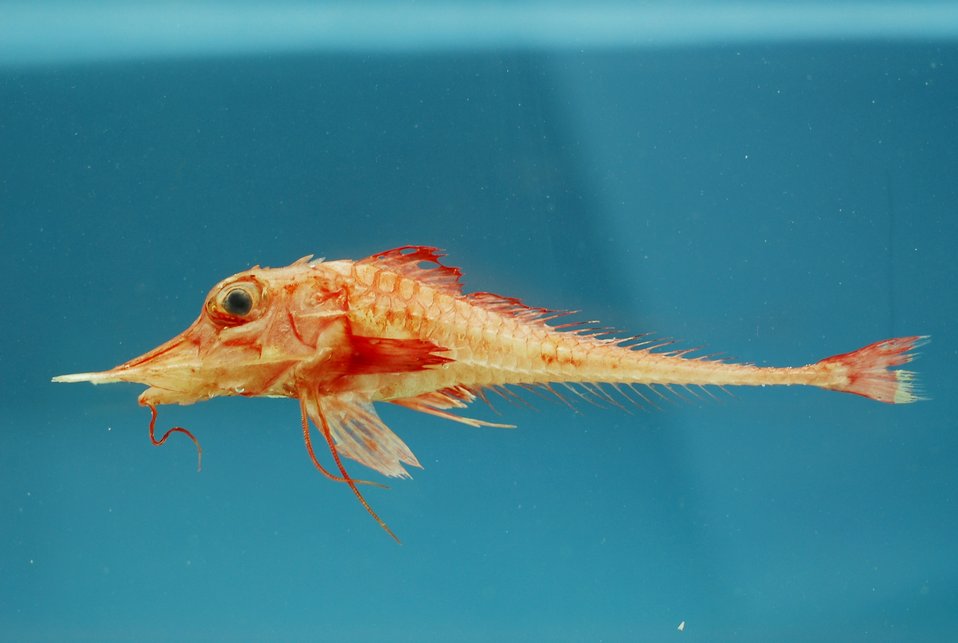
Alligator searobin ( Peristedion greyae )